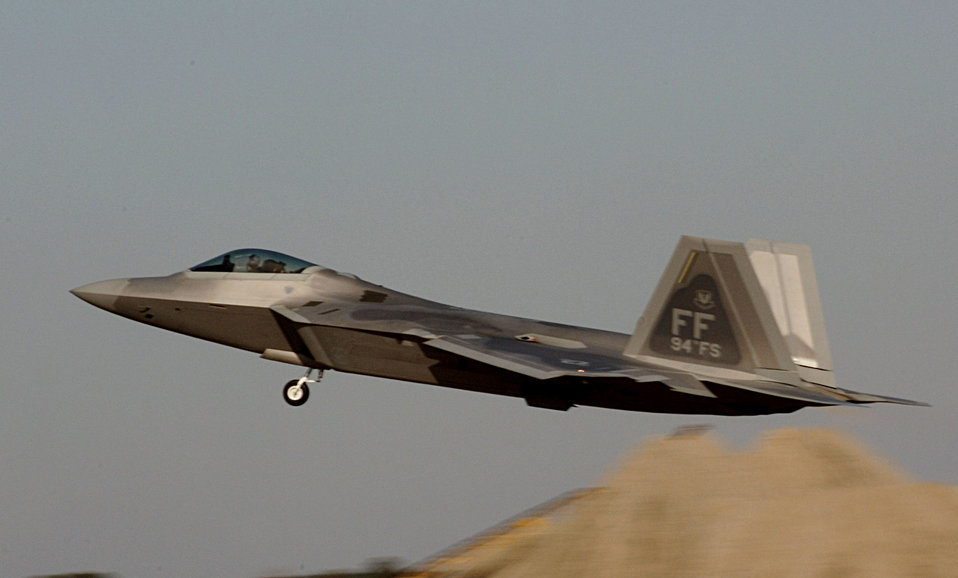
Raptors head to Red Flag

Lt. Col. Dirk Smith takes flight in an F-22 Raptor Feb. 3 at Langley Air Force Base in Virginia.The 94th Fighter Squadron is deploying for Red Flag at Nellis AFB, Nev. Red Flag is an air combat training exercise designed to test pilots and air support crews' ability to affectively respond to real-world combat scenarios. This is the first deployment to Red Flag for the 94th FS with F-22s. Colonel Smith is the 94th FS commander.